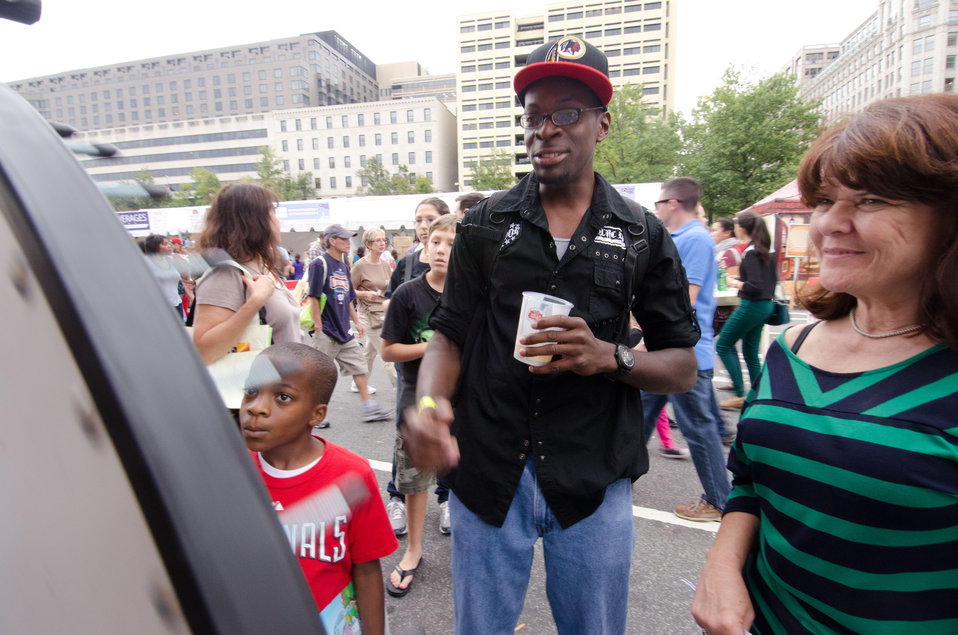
This young visitor spun a jackpot question and answered it correctly, allowing him to choose a digital thermometer for his dad to check the temperature of cooked meat; outside Agriculture’s mobile Discovery Zone at the Taste of DC event, are information materials that answer many every-day questions about maintaining safe food practices at home, additionally, games offered a fun way for children and parents to test their knowledge related to the four main principals of food safety – clean, separate, cook and chill. For more information see www.fsis.usda.gov/foodsafetymobile/
Taste of DC event highlights more than 70 eateries, 30 specialty beer providers, the United Service Organization (USO) Metropolitan Washington, and live bands who anticipate more than 500,000 people to attend over the course of the three-day event, which extends from the White House to the Capitol, along Pennsylvania Ave., in Washington D.C. on October 6, 2012. Agriculture Food Safety and Inspection Service specialists present talks and cooking demonstrations.